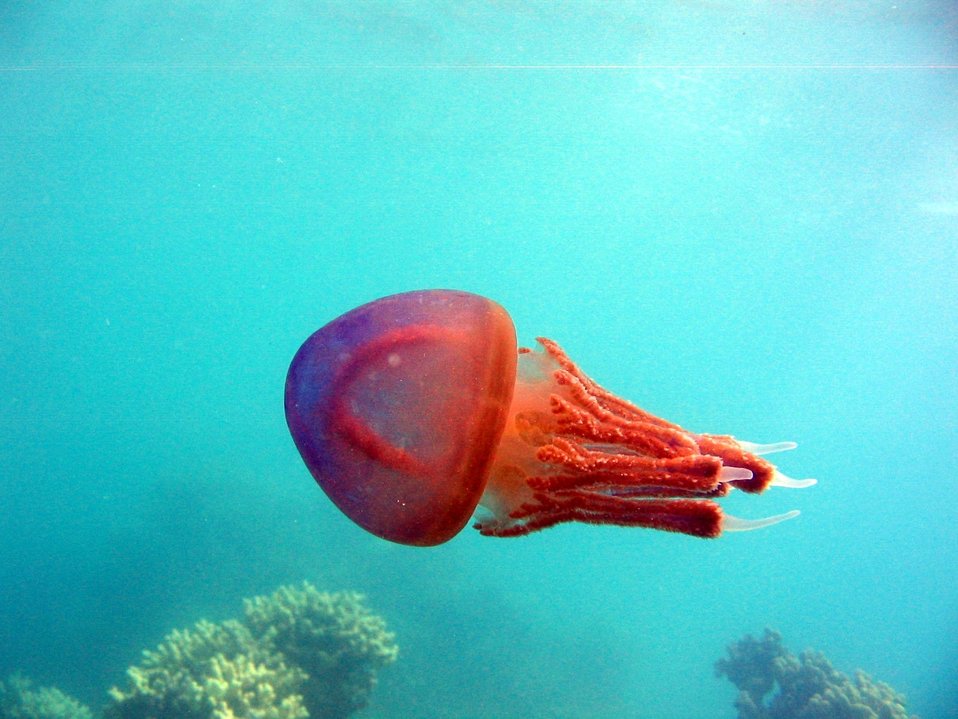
A red jellyfish.